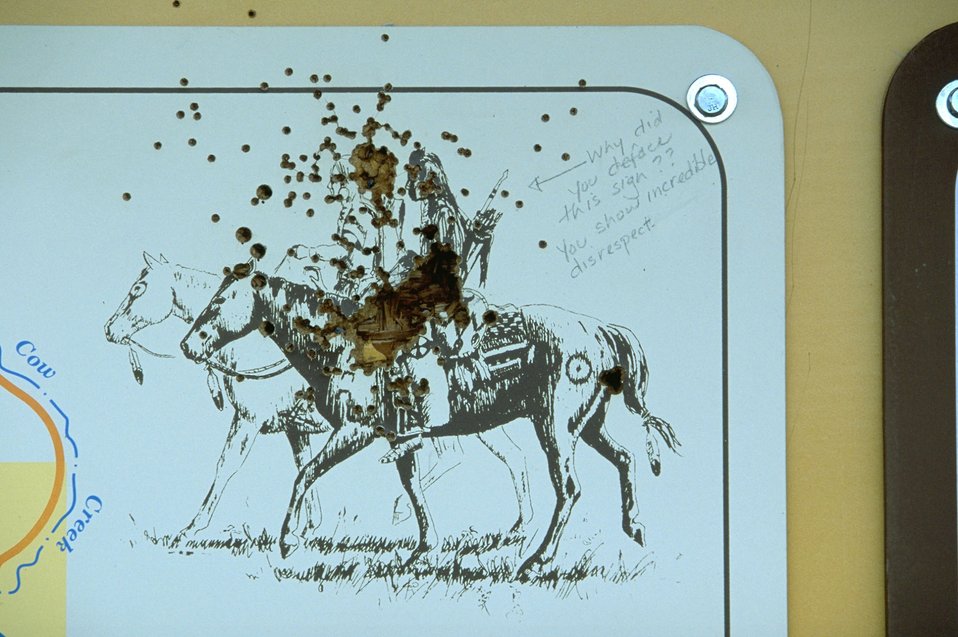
Bullet holes in Kiosk, with a note from a displeased visitor